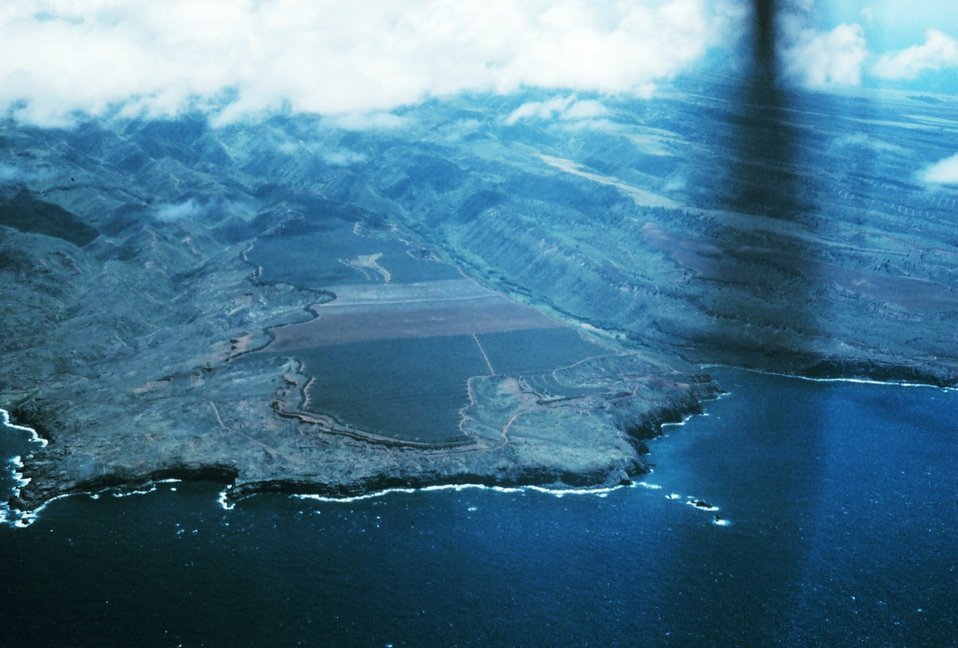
Molokai shoreline